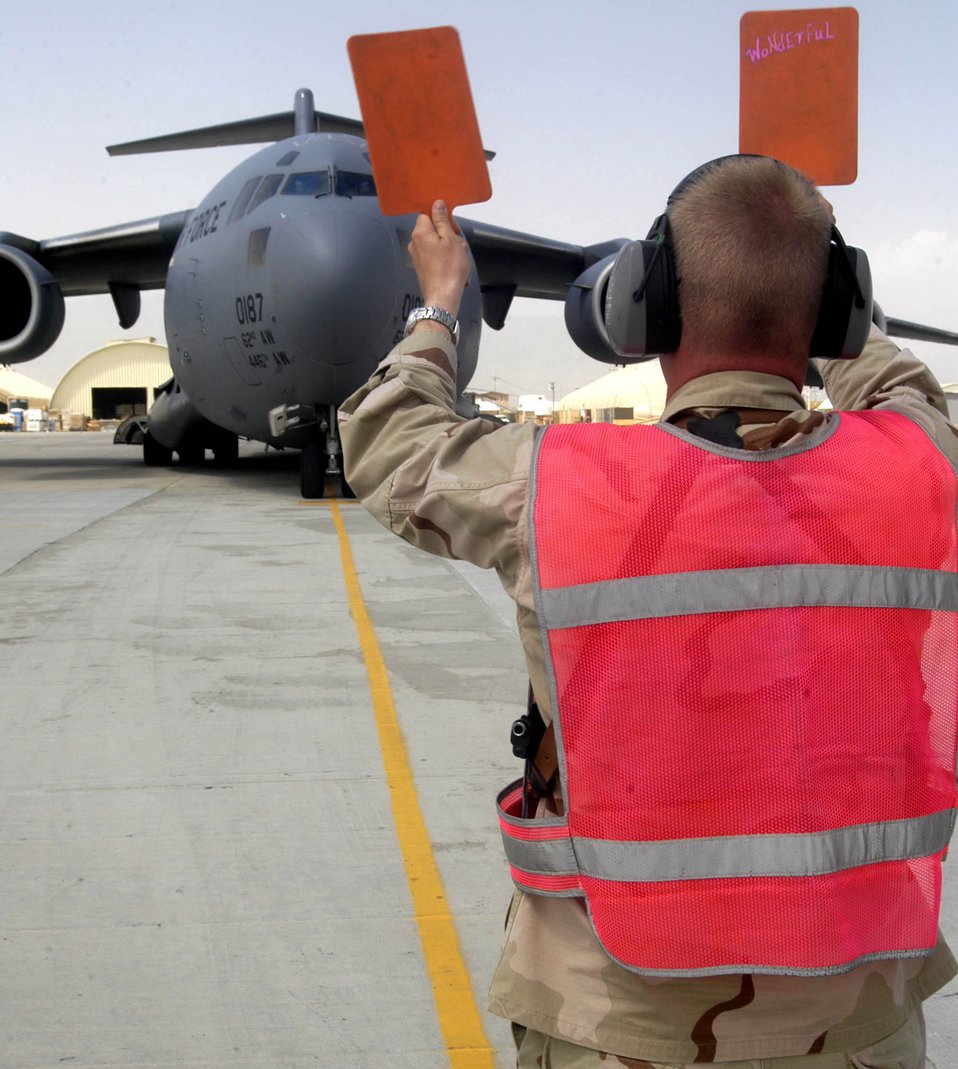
Bagram team parks 2,000th transient aircraft

Maj. Timothy Coger marshals a C-17 Globemaster III into its parking spot at Bagram Air Base, Afghanistan, Sept. 2. The C-17, from the 62nd Airlift Wing at McChord Air Force Base, Wash., was the 2,000th transient aircraft to land at Bagram for Air Expeditionary Forces 1 and 2, which began May 7. That number equates to an average of 17 aircraft transiting Bagram daily. Major Coger is the commander of the 455th Expeditionary Maintenance Squadron at Bagram and is deployed from Spangdahlem Air Base, Germany.